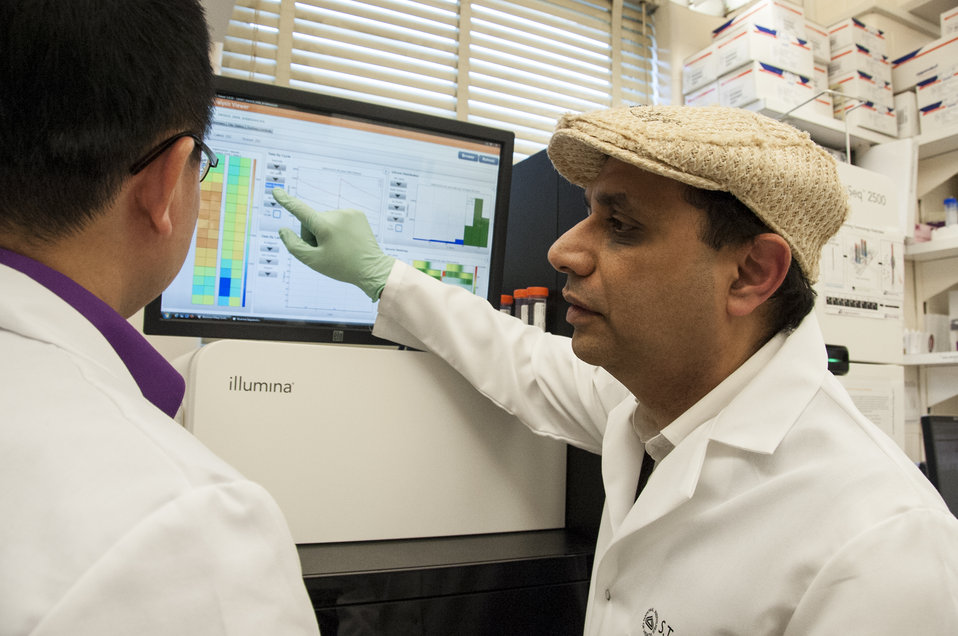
Bio Threats: FDA's A-Team (6337)

Zuben Sauna, Ph.D., (right) principal investigator in CBER's hemostasis laboratory, and chemist Wells Wu, Ph.D., are exploring the shapes of proteins used in medical treatments to determine why they prompt a strong reaction from the body's immune system. Suspecting that the shapes may be part of the problem, the researchers are using tiny pieces of DNA-like molecules called aptamers to probe the proteins. Hemostasis is the process of getting bleeding to stop and the antibodies that cling to these proteins are causing life-threatening complications, particularly in the treatment of bleeding disorders.

Scientists at FDA’s Center for Biologics Evaluation and Research (CBER) work to facilitate the development of safe, effective treatments that would neutralize biological threats to public health and security. CBER regulates preventive and therapeutic vaccines, blood and blood products, human cell and tissue-based products, gene therapies and xenotransplantation. To learn more, read this FDA Consumer Update:

• FDA Teams Prepare for Biological Threats